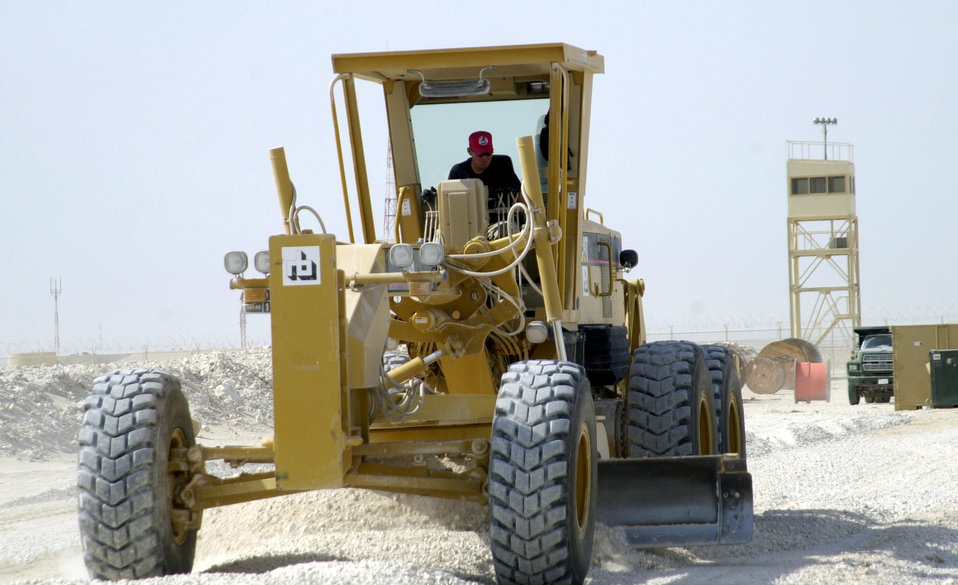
Horsing around

SOUTHWEST ASIA -- Staff Sgt. Mike Garcia uses a grader to prepare a road bed for asphalt. Garcia is a heavy equipment operator assigned to the 1st Expeditionary Red Horse Group. The group is building facilities and putting in roads at a forward-deployed location.